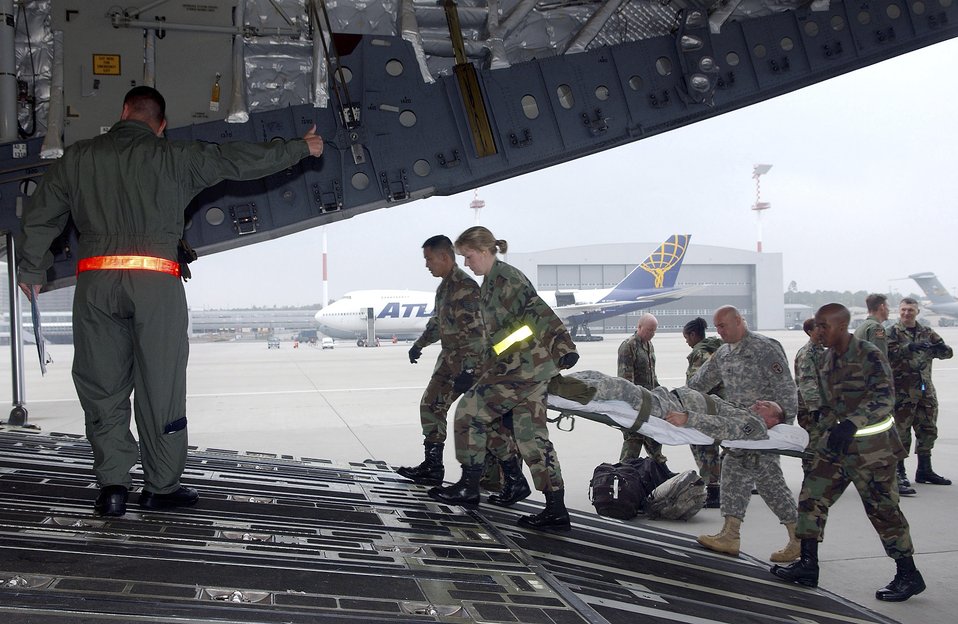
Medevac Mission

Airmen and Soldiers from the Contingency Aeromedical Staging Facility load a patient into a C-17 Globemaster III Oct. 13 at Ramstein Air Base, Germany, in preparation for a medical evacuation flight to Andrews Air Force Base, Md.